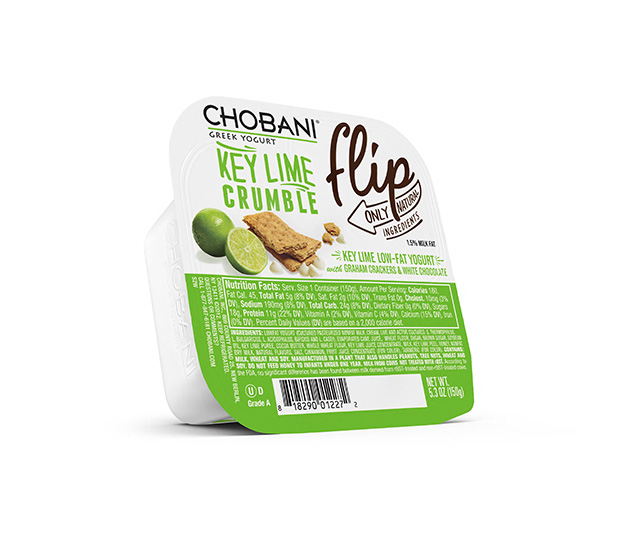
RECALLED – Greek yogurt products

September 6, 2013 – Product Recall – Chobani, Inc. Voluntarily Recalls Greek Yogurt Because of Product Concerns.